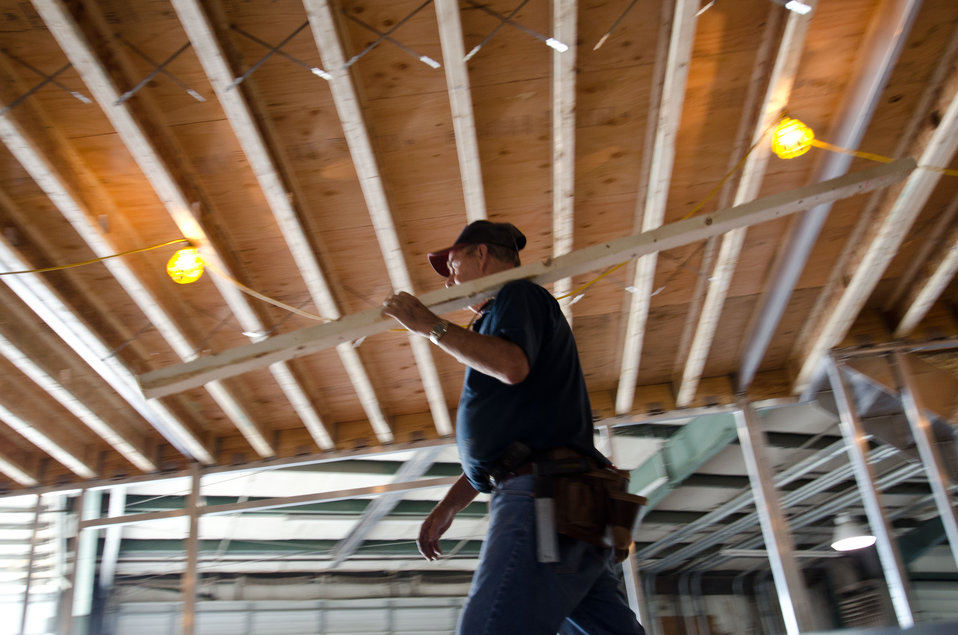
Stardust Industries is helping retool and redirect Kentucky’s houseboat manufacturing industry – which has been decimated because of the struggling economy – by using its facilities and manpower to create low-cost housing that is energy efficient. Rural Development obligated $499,000 in Rural Business Enterprise Grant funds to support this unique endeavor. Up until a few years ago, there were several successful houseboat manufacturers in the four-county area surrounding the city of Somerset. Most have now ceased operation or drastically reduced output, which has led to dramatic, long-term job loss. These new energy efficient homes will be constructed in redesigned, refitted houseboat factories using local workers that have been retrained.